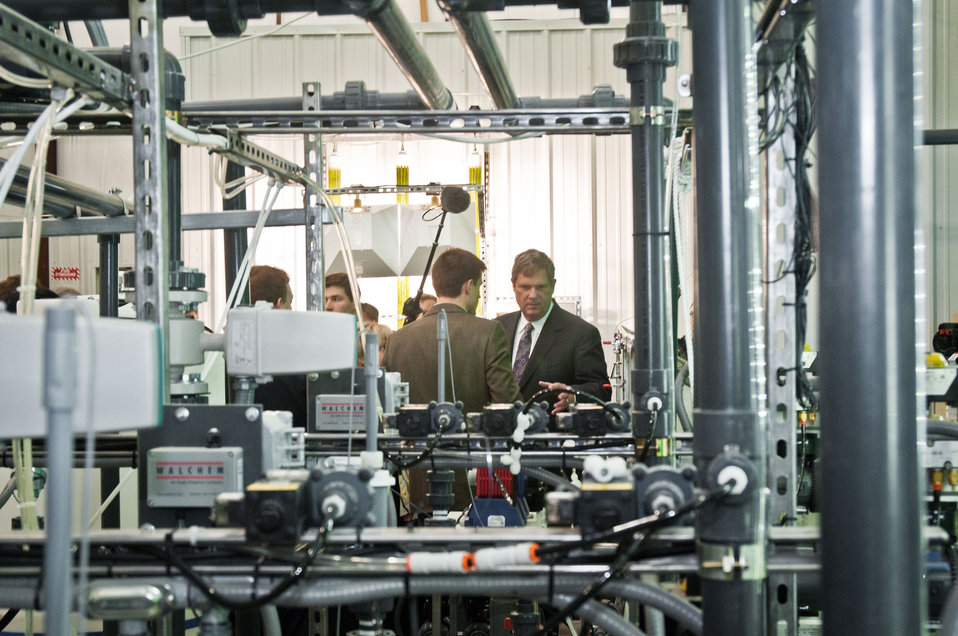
BioProcess Algae Senior Scientist Toby Ahrens shows Agriculture Secretary Tom Vilsack (right) how attached growth slows carbon dioxide (CO2) emissions to pump adjacent facilities directly into the reactor headspace at the BioProcess Algae facility at Green Plains Renewable Energy (GPRE), Inc. on Friday, April 15, 2011 in Shenandoah, IA. Secretary Vilsack spoke at the Grand Opening of Phase II at GPRE. Phase II is a key component in the commercial scale photo bioreactors/harvesters during a tour of the facility. Secretary was at the facility for the grand opening ceremony The operation is co-located within an GPRE’s ethanol factory and where BioProcess Algae technology is used to waste products; carbon dioxide, recycled heat and water to mass-produce algae. Algae from this facility are used for animal feeds, pharmaceutical and beauty products.